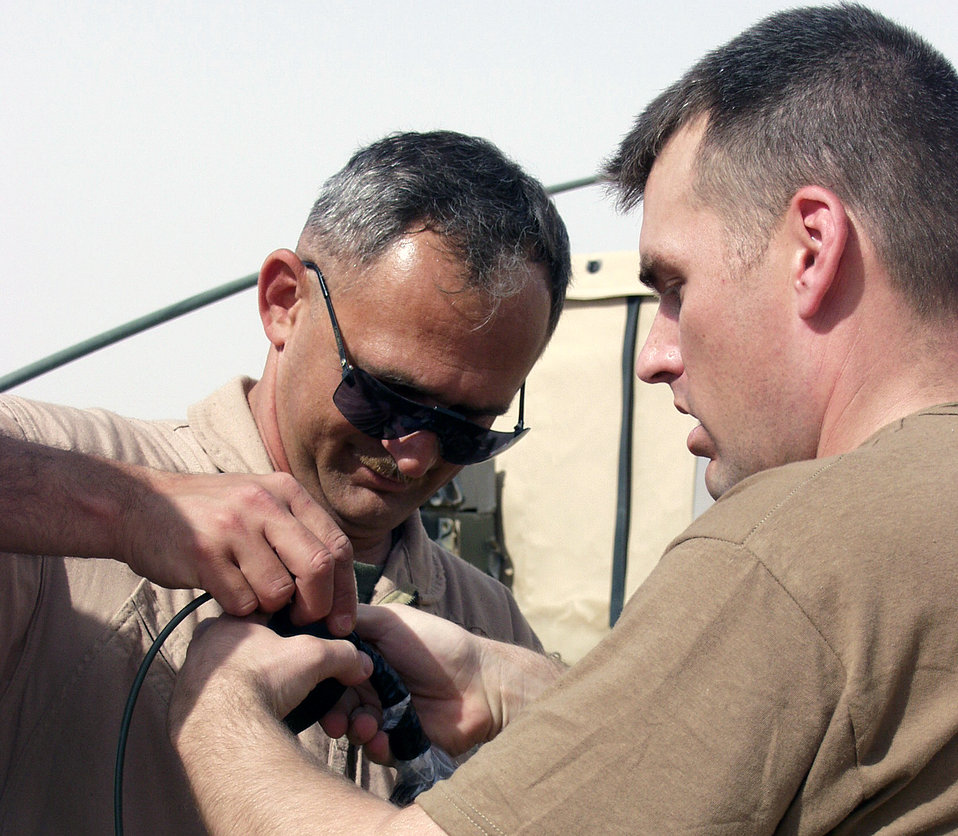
EOD teamwork

OPERATION IRAQI FREEDOM -- Marine Corps Master Sgt. Roy Dickison (left) and Staff Sgt. Edward Lockhart and prepare a smokeless powder bag to burn rocket propellant. Both men are explosive ordnance disposal technicians at a forward-deployed location.